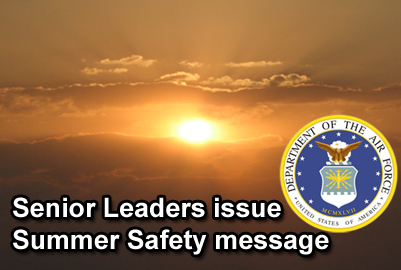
Air Force leaders send summer safety message

The Air Force's top leaders have issued a Critical Days of Summer safety message.